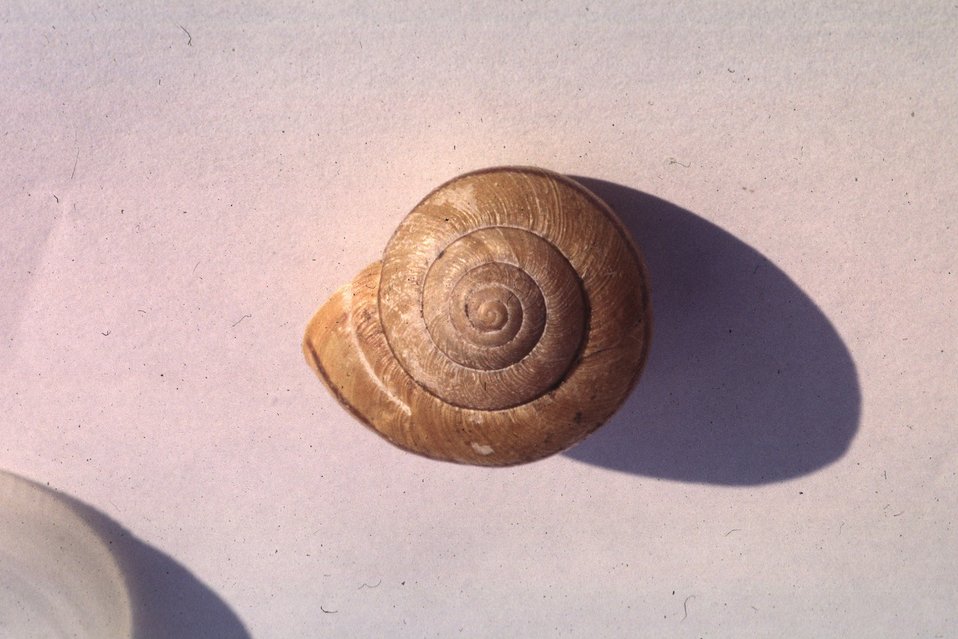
Klamath Shoulderband (Helminthoglypta talmadgei).